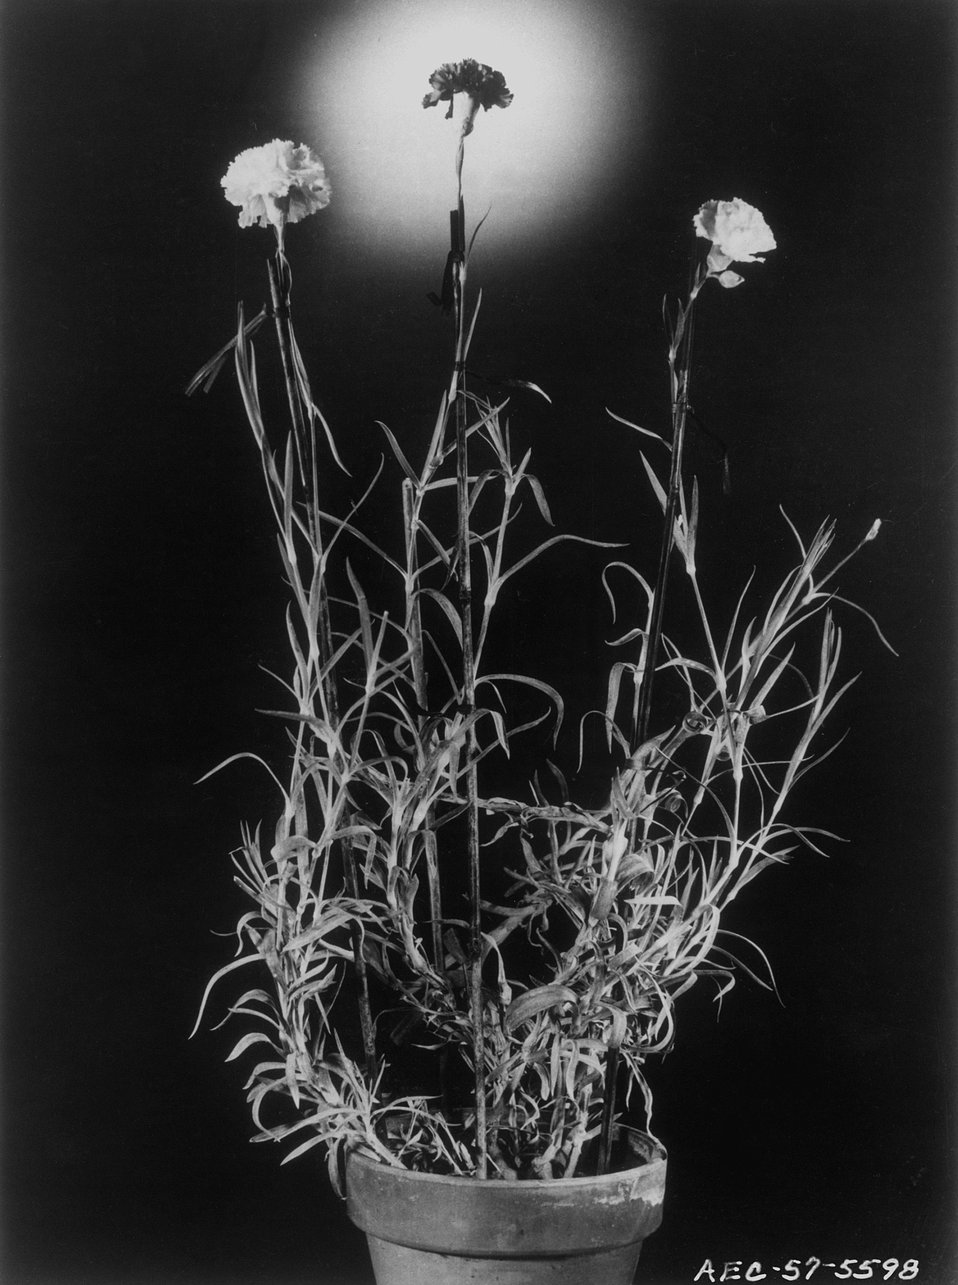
Example of the use of radiation to accelerate plant mutations. c. 1957